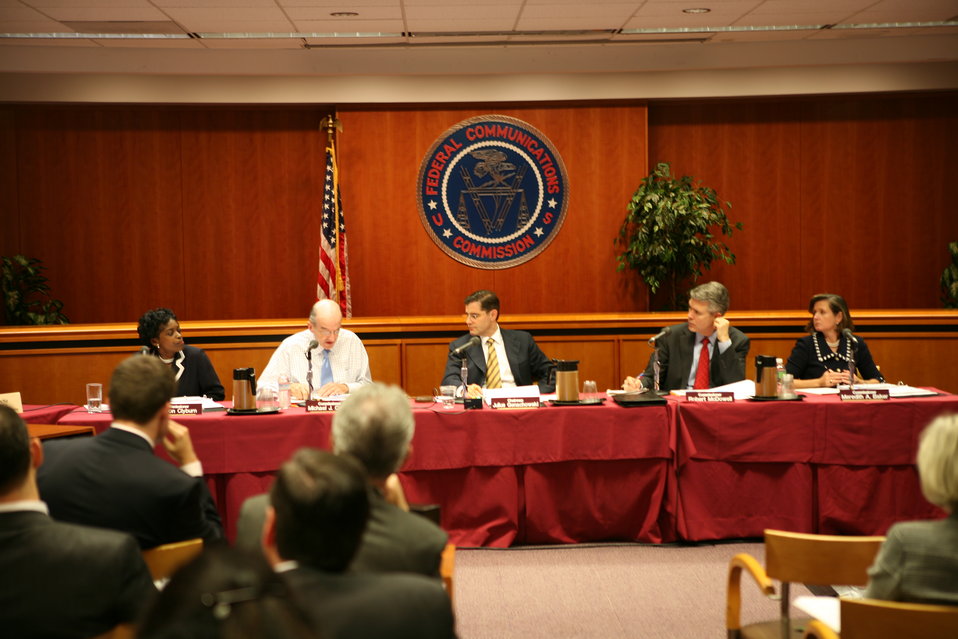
Broadband Midterm Review 9-29-09